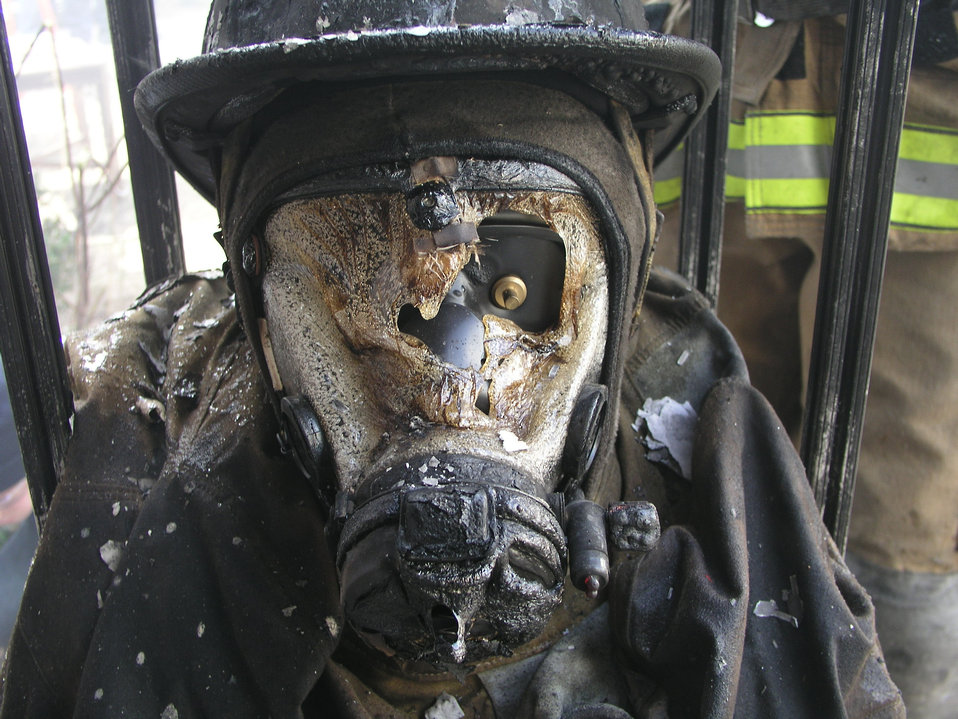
Fire Test

Opening the door provided additional air to a smoldering living-room fire and caused the fire to increase in burning rate and flames to extend out the doorway, resulting in high temperatures and heat flows that melted a hole in the mask. Pressure sensor (brass fitting that was mounted on the face of the headform) is visible through the hole in the lens.